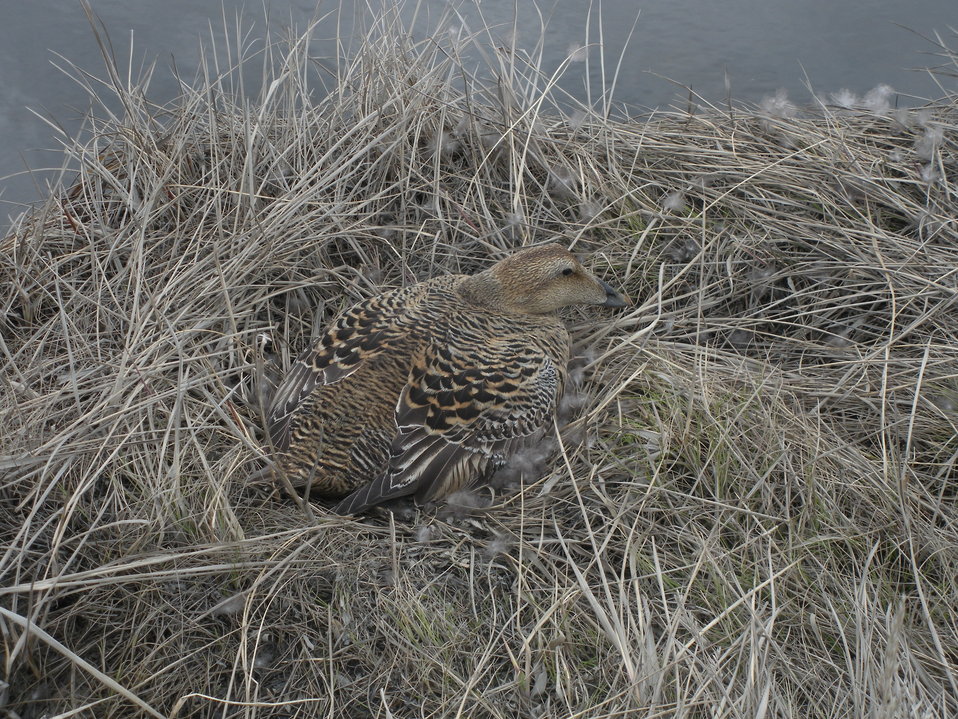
Common eider incubating

Yukon Delta NWR